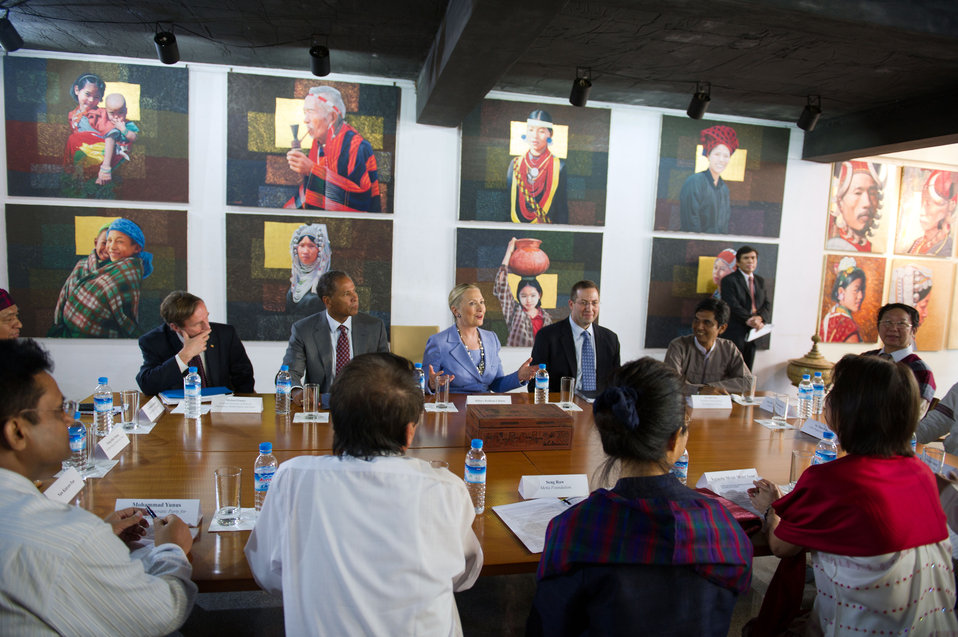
Secretary Clinton Meets With Burmese Ethnic Minority Representatives

U.S. Secretary of State Hillary Rodham Clinton meets with representatives of ethnic minority groups in Rangoon, Burma, on December 2, 2011. Also featured in the photo are Embassy Rangoon Charge d'Affaires Michael Thurston, left of Secretary Clinton; and Assistant Secretary of State for Democracy and Human Rights Michael Posner, left of Charge d'Affaires Thurston.